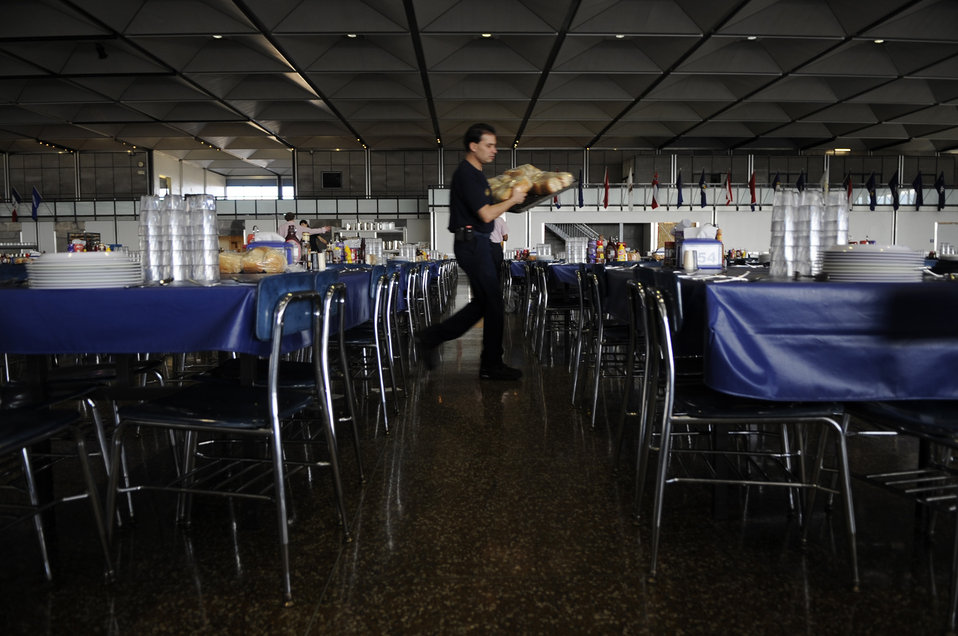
U.S.Air Force Academy Mitchell Hall Cadet Dining Facility

Izzy Colon puts bread on tables in preparation for lunch Jan. 23 at Mitchell Hall Cadet Dining Facility at the U.S. Air Force Academy in Colorado Springs, Colo. The dining facility feeds approximately 4450 cadets and sits on 1.75 acres.